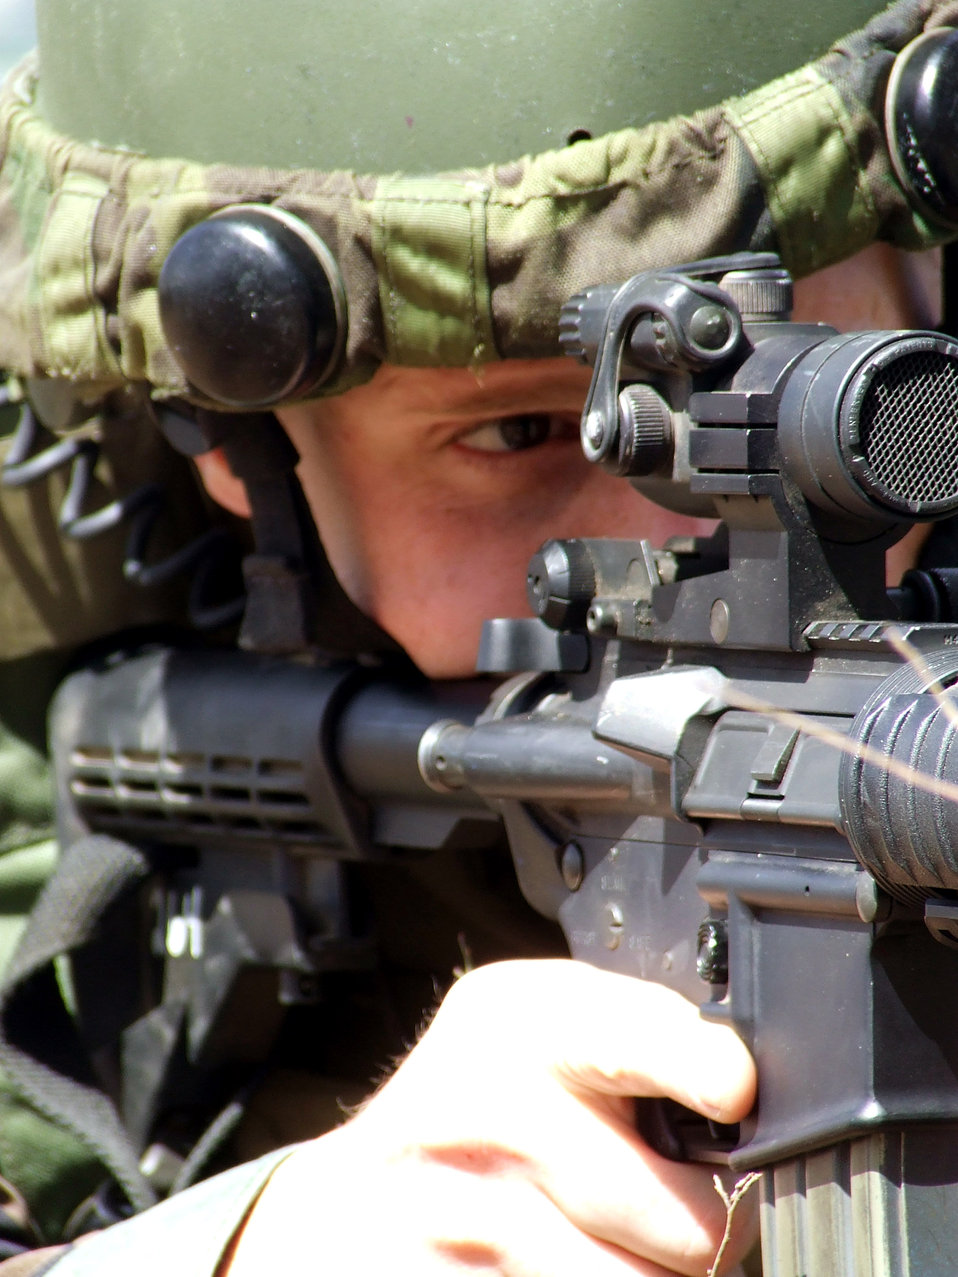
Eagle Flag prepares participants for real-world success

Staff Sgt. Joel Bane responds to a scenario during operations for Air Force Exercise Eagle Flag 07-4 April 21 at Naval Air Engineering Station Lakehurst, N.J. The exercise is operated by the U.S. Air Force Expeditionary Center's 421st Combat Training Squadron. Sergeant Bane is assigned to the 818th Contingency Response Group at McGuire Air Force Base, N.J.